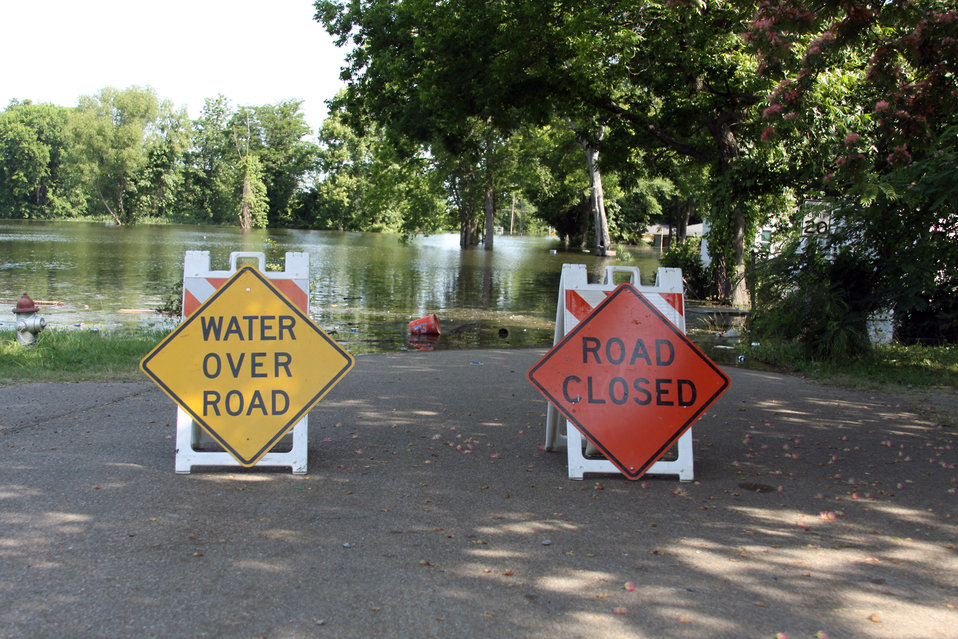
Road signs warn of flooded roadways in Vicksburg, MS, on Thursday, May 18, 2011.